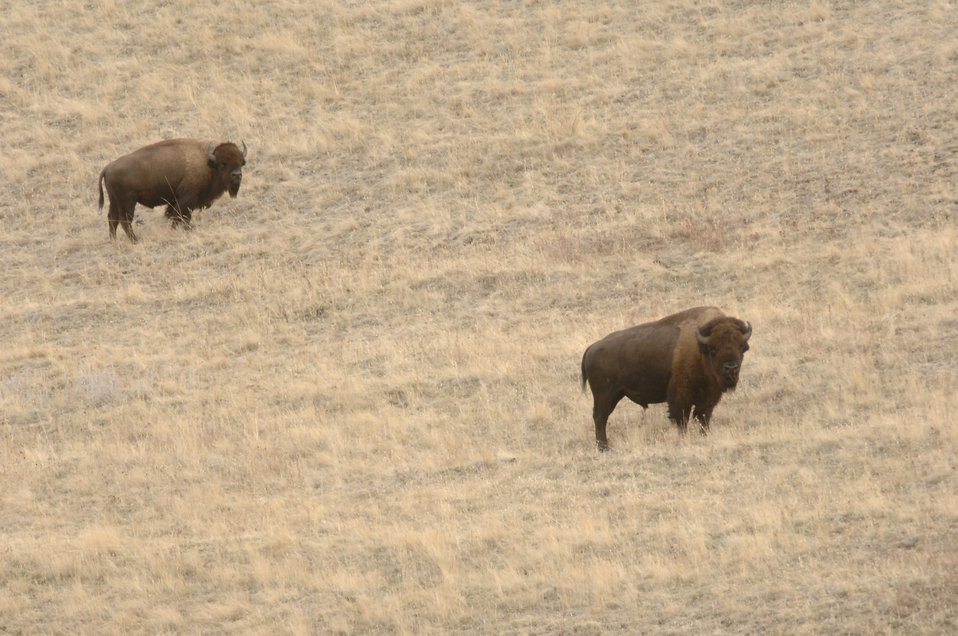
American bison graze in the National Bison Range Wildlife Refuge in Montana on November 17, 2007. The U.S. Fish and Wildlife Service administers this refuge as part of the National Wildlife Refuge System. The refuge was established in 1908 and is one of the oldest Wildlife Refuges in the nation and was established to support a population of American bison. There are approximately 350-500 American bison in the refuge.